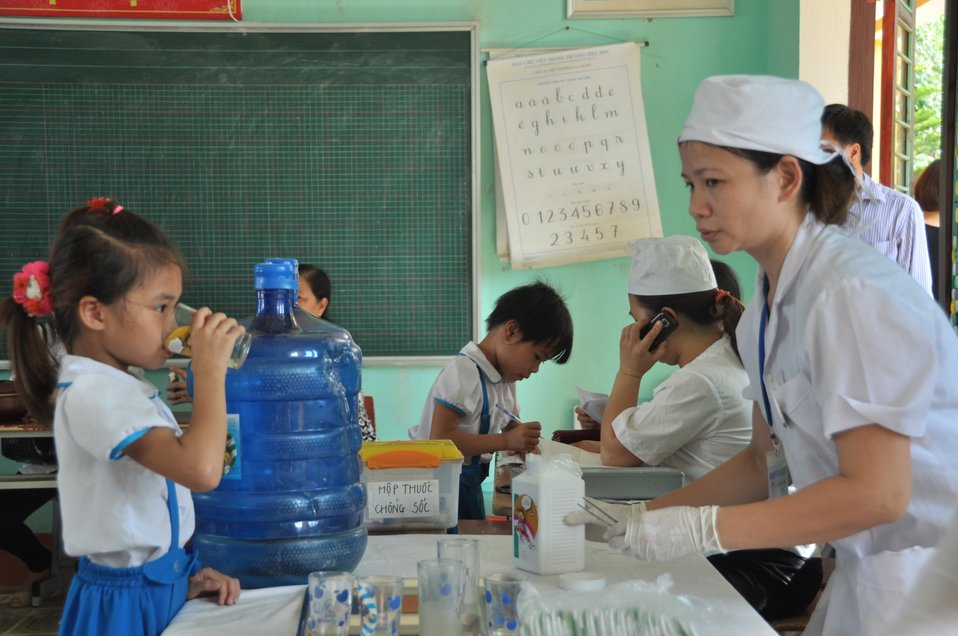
USAID supports deworming education and medication distribution in Bac Giang Province

May 20, 2013